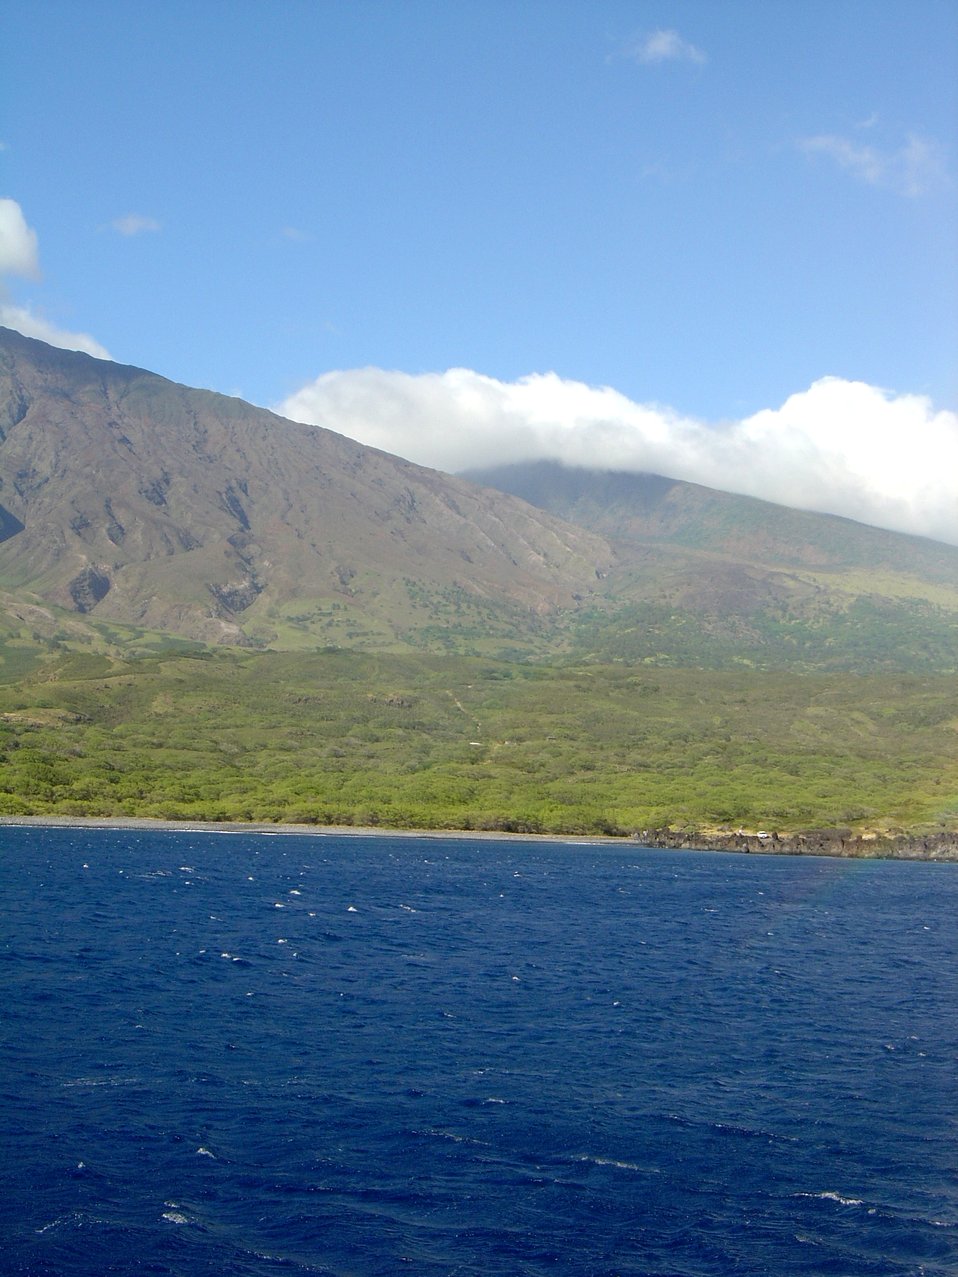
Coast of southern Maui.